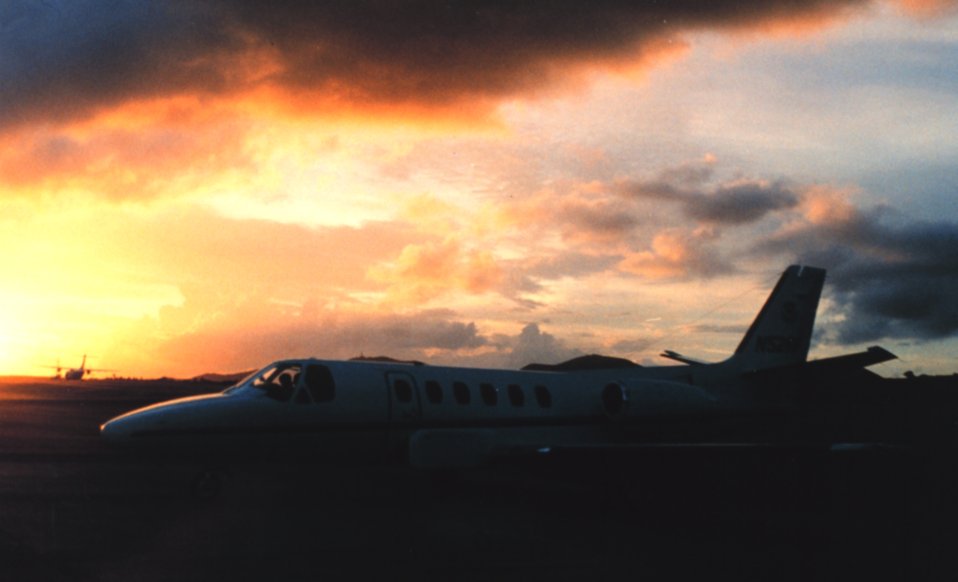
NOAA Cessna Citation II jet aircraft at sunset at Rohlsen International Airport.